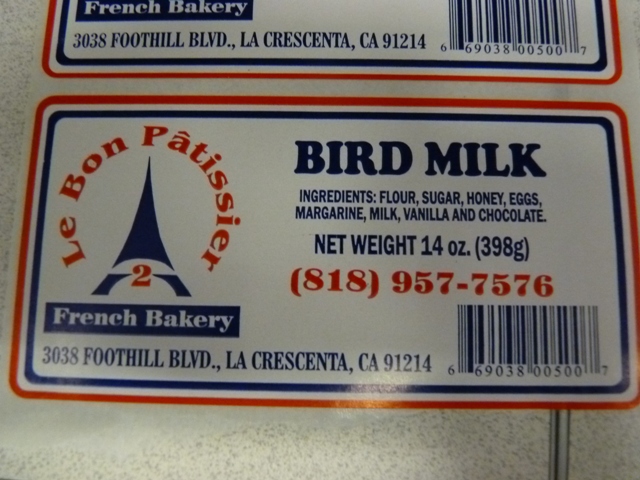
ProductLabels9RECALLED - Pastry Products

April 5, 2011 – Product Recall – Le Bon Patissiere-2, Inc. Announces Voluntary Recall On Select Le Bon Patissiere Products That Contain Undeclared Allergens.